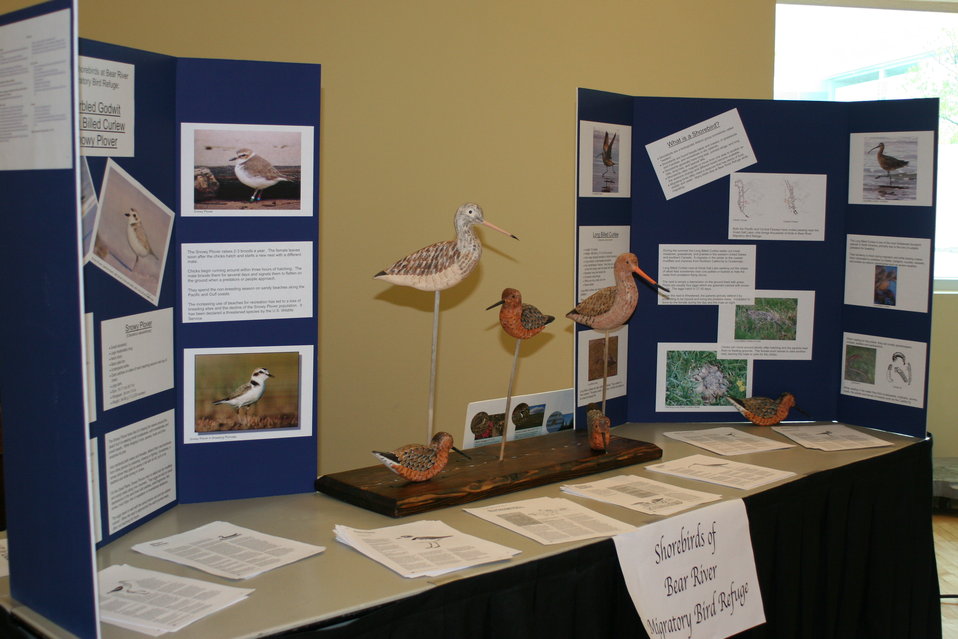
Outreach

Photo Credit: Suzanne Fellows / USFWS
The U.S. Fish & Wildlife Service sponsored the 2012 Federal Duck Stamp Art Contest September 28 and 29 in Ogden, Utah, at Weber State University. A panel of five judges was responsible for choosing the art work used to design the 2013-2014 Migratory Bird Hunting and Conservation Stamp.